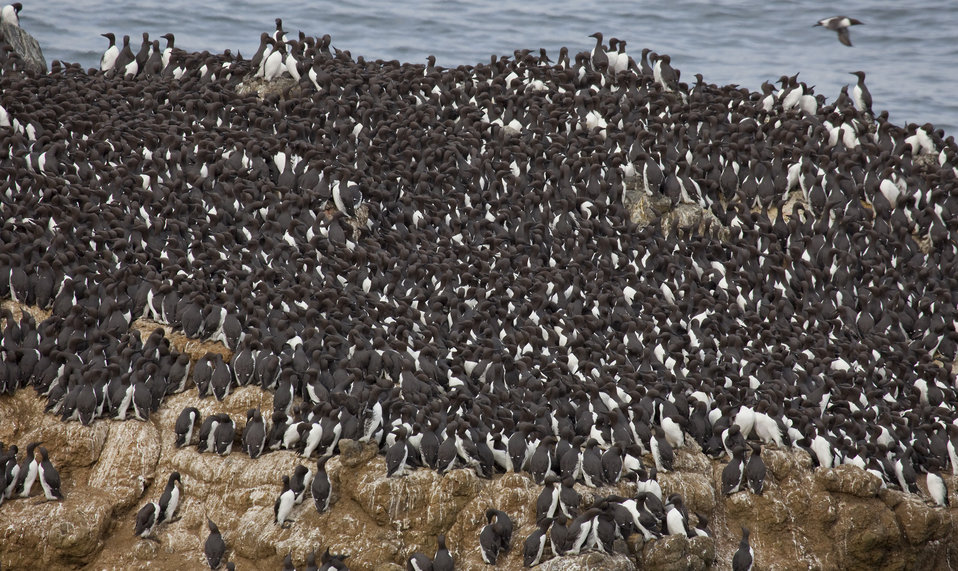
Common Murre Colony

Oregon Islands National Wildlife Refuge, OR
Nesting colony on Colony Rock at Yaquina Head